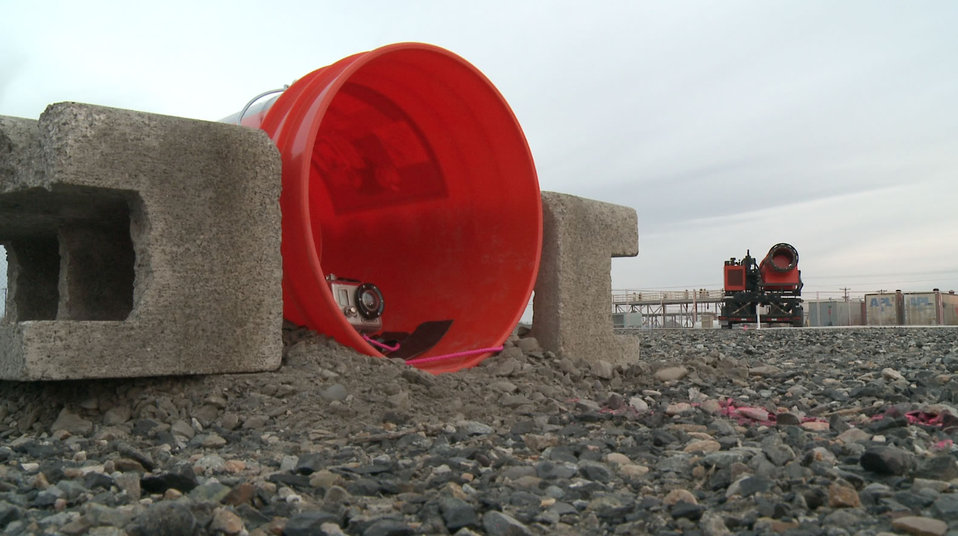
Hanford Site Demolitions

A camera is placed inside a protective case to keep it safe while capturing images of Hanford Site demolitions.